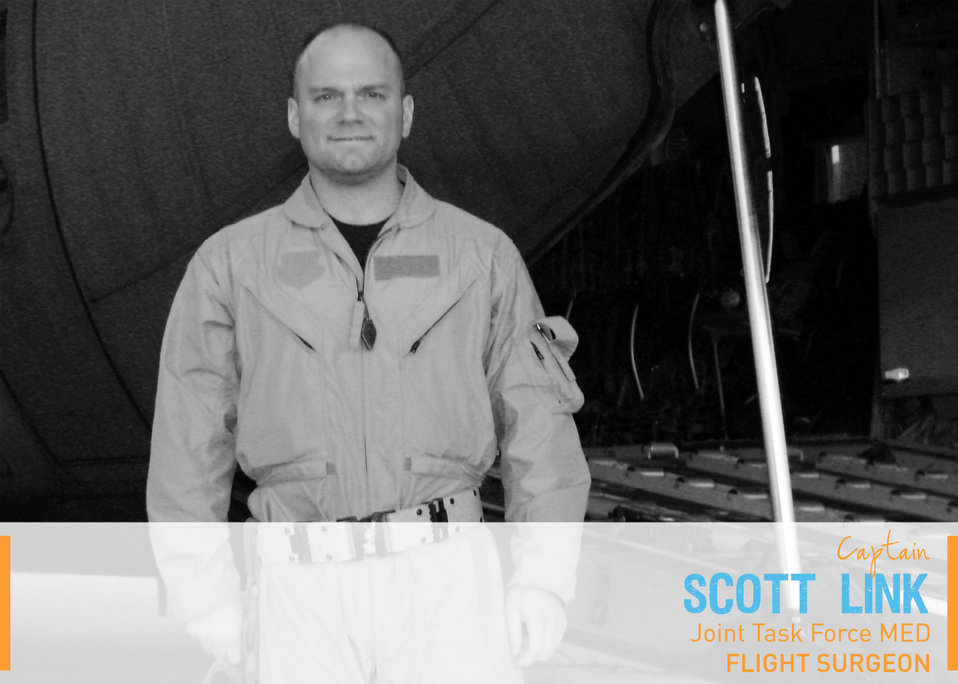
Portraits in Courage Vol 4: Capt. Scott Link, fliglht surgeon, at Craig Joint Theater Military Hospital, Joint Task Force Medical Expeditionary Detachment. He led the charge into the aftermath of a suicide bomber at the installation front gate, saving the lives of dozens of coalition force people and Afghan nationals.